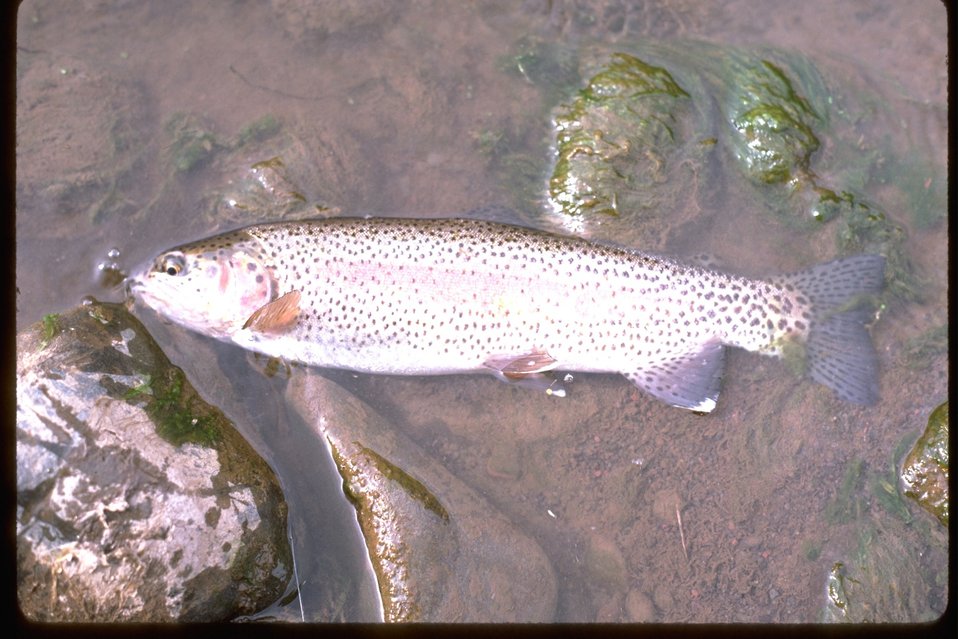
Red Band Trout.